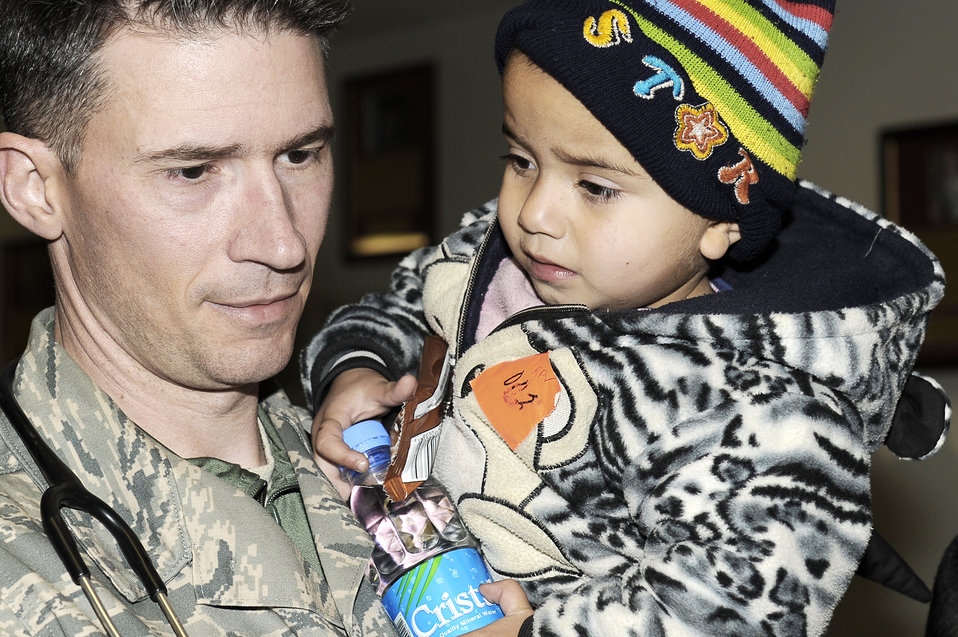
You're safe now...

Master Sgt. Jan Fink holds a young avalanche survivor who was medically evacuated Feb. 9, 2010, to Craig Joint Theater Hospital at Bagram Airfield, Afghanistan. Dozens of Afghans were taken to Bagram Airfield after avalanches struck a mountain pass in the Parwan Province. Sergeant Fink is assigned to the 455th Expeditionary Medical Group.